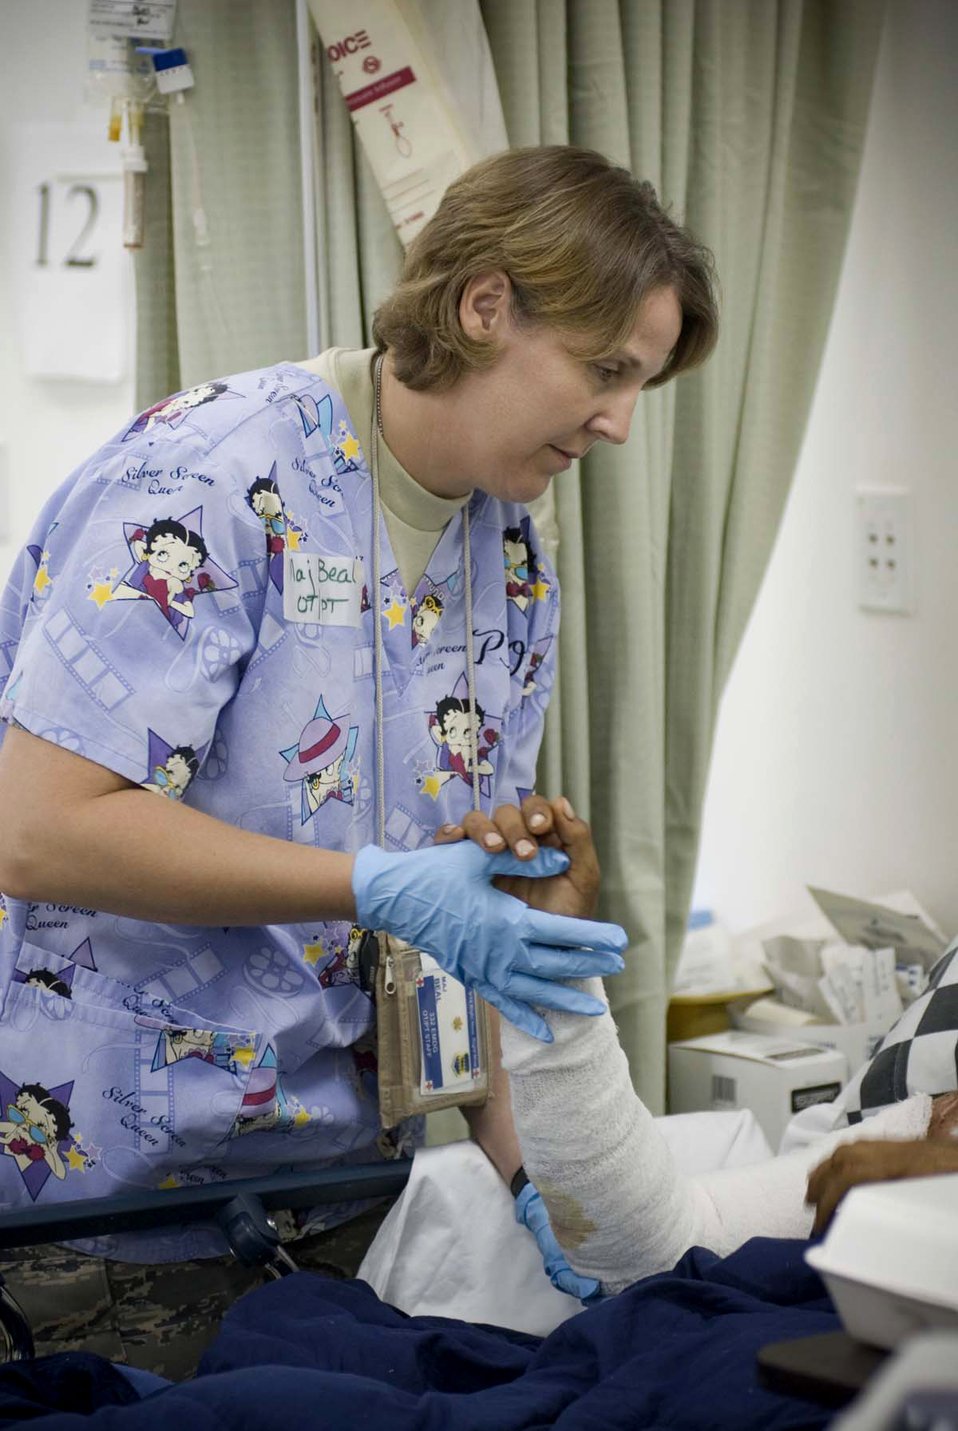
Therapy clinic provides magic touch to injured

Maj. Sarah-Ann Beal helps a patient perform passive range of motion exercises on his arm Oct. 4 at the Air Force Theater Hospital in Balad, Iraq. Passive range exercises help retain flexibility and prevent stiffening of the joints. This exercise is performed about twice a day. Major Beal is a 332nd Expeditionary Medical Support Squadron occupational therapist.